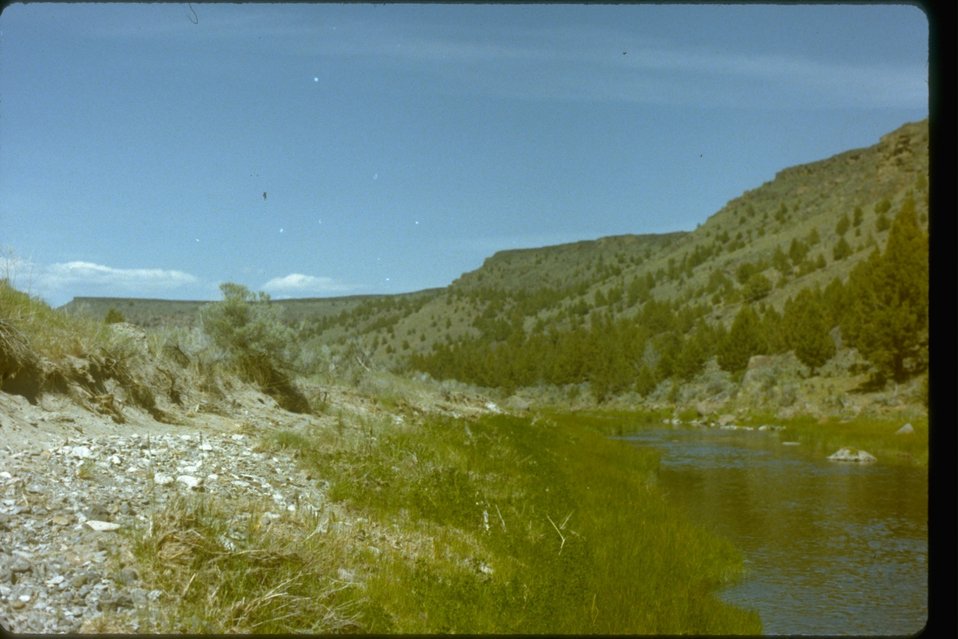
Riparian area along the South Fork Wilderness Study Area. OR 5-33